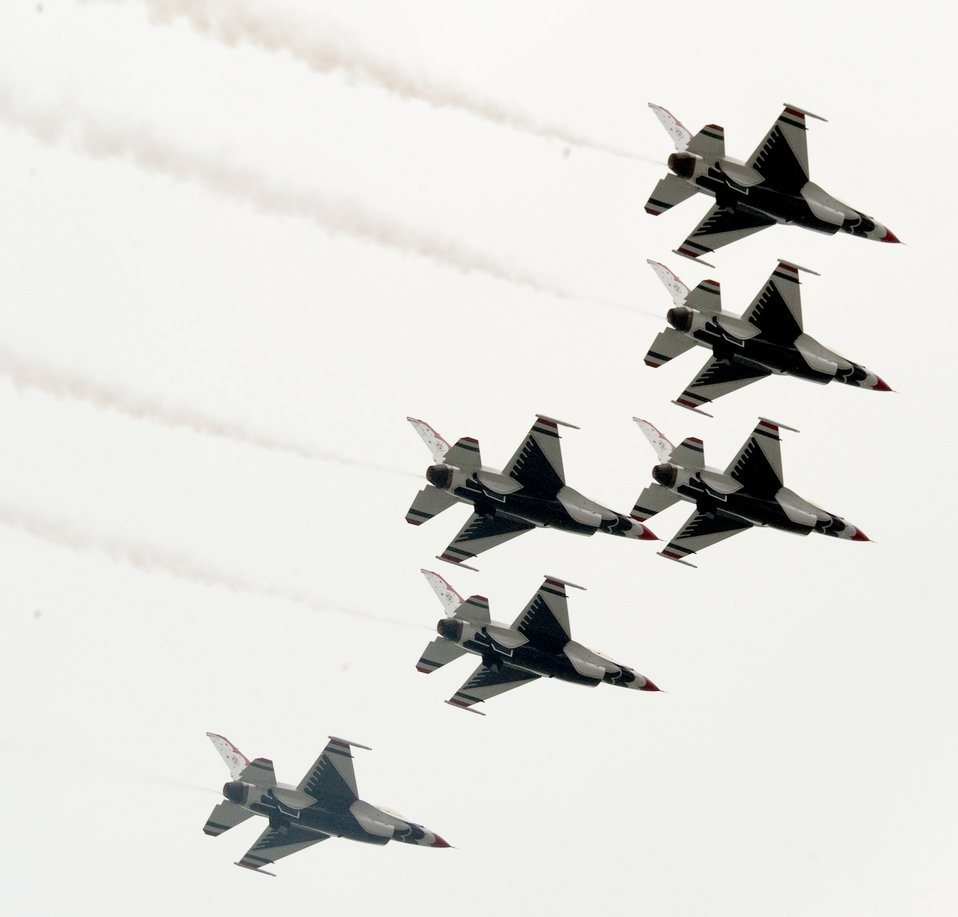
Opening ceremony for Air Force Week

The Thunderbirds, the Air Force aerial demonstration team, flies over the USS Intrepid Sea, Air and Space Museum during the Air Force Week New York City proclamation ceremony Aug. 24.